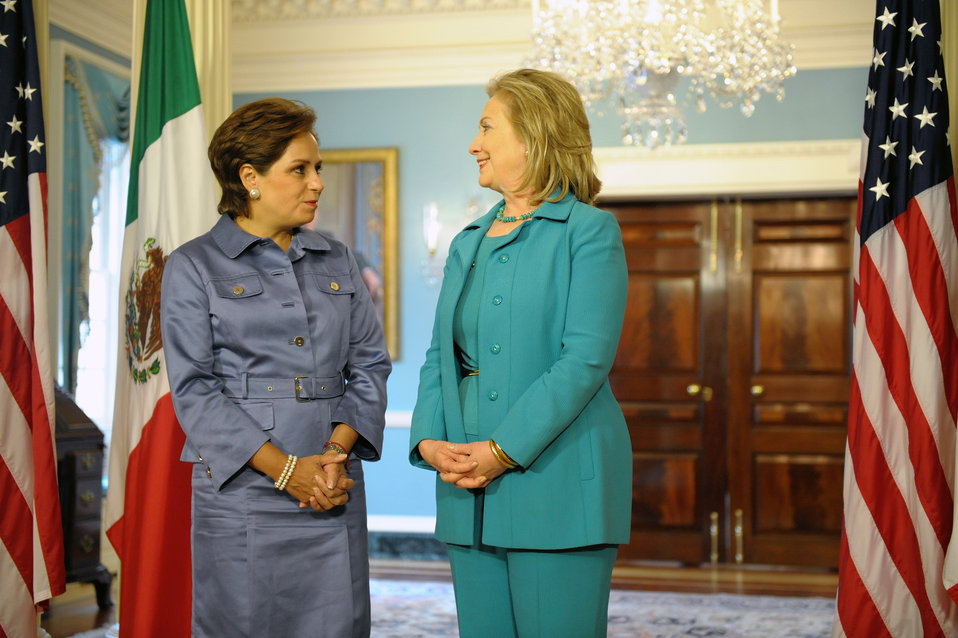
Secretary Clinton Speaks With Mexican Foreign Minister Espinosa

U.S. Secretary of State Hillary Rodham Clinton speaks with Mexican Foreign Minister Patricia Espinosa after their bilateral meeting, at the U.S. Department of State in Washington, D.C., on April 29, 2011.